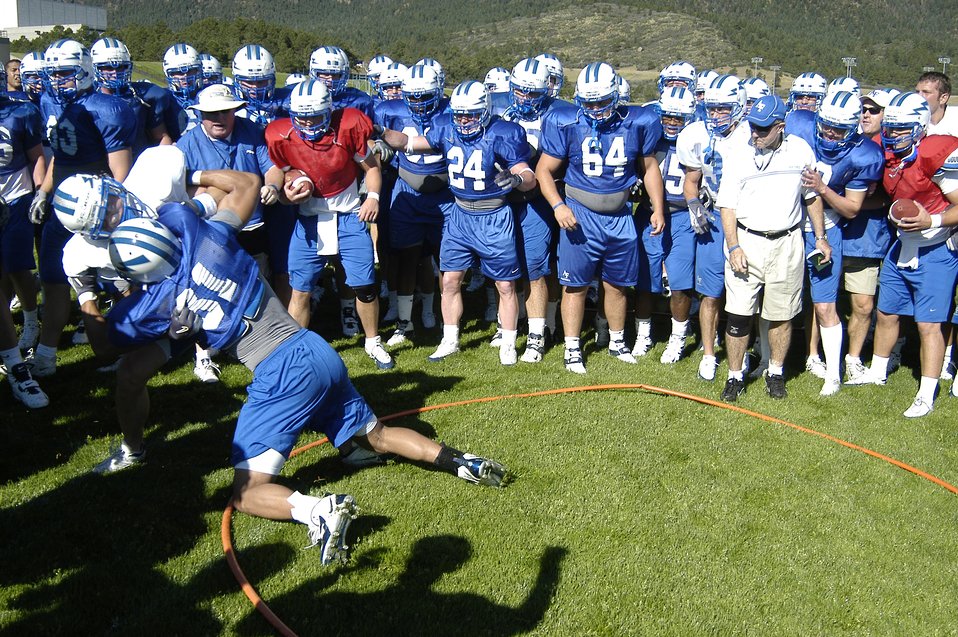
Falcons train

Falcons Head Coach Fisher DeBerry and Falcon players watch the end of a